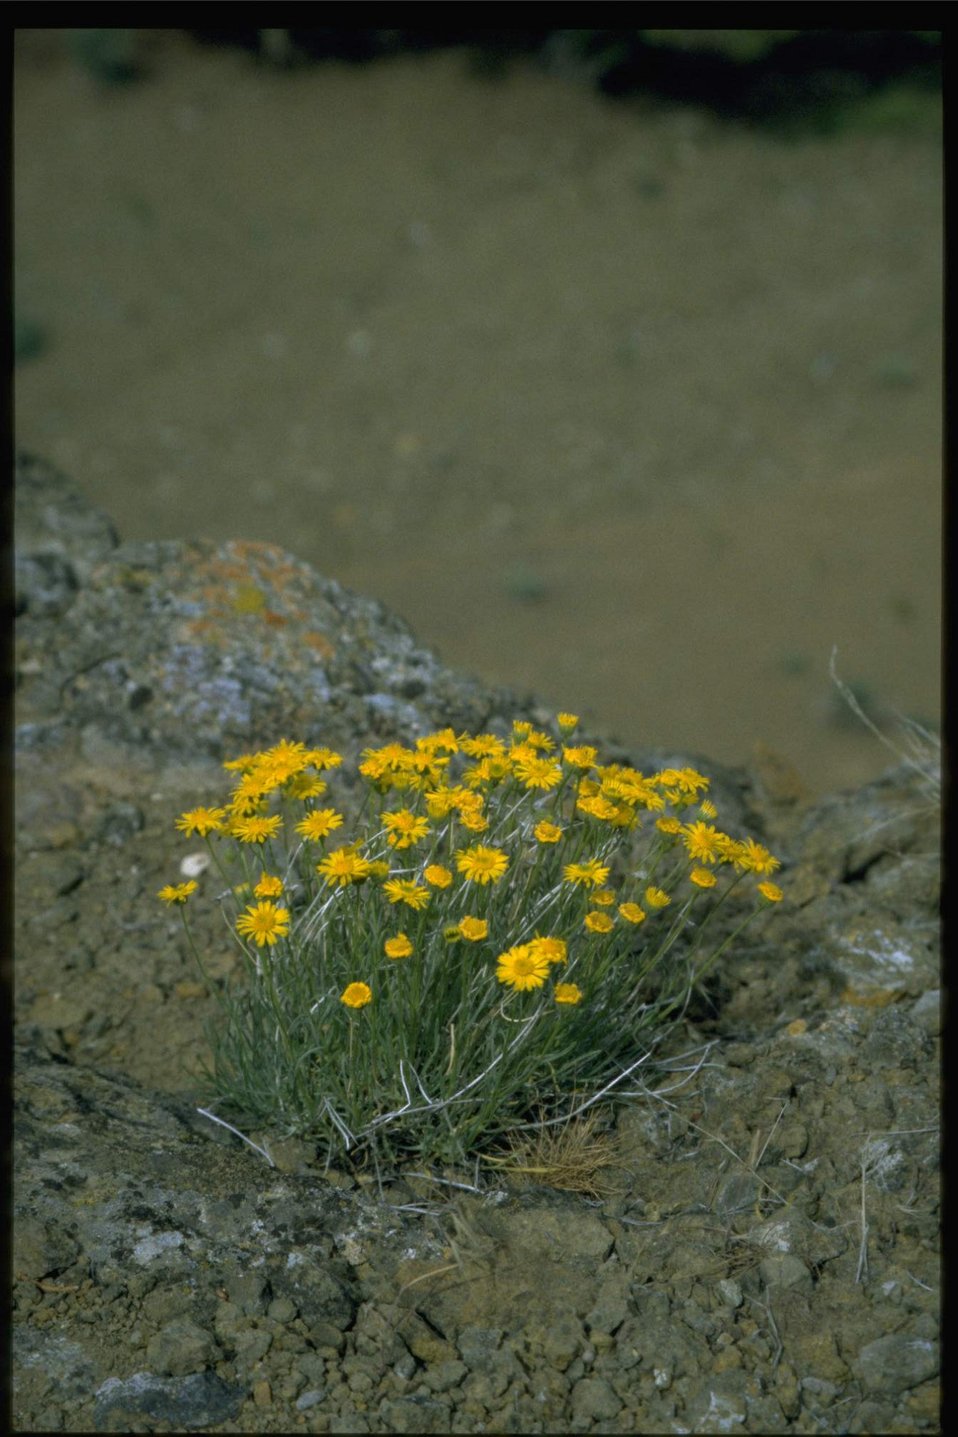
Far shot of buckwheat wildflowers.